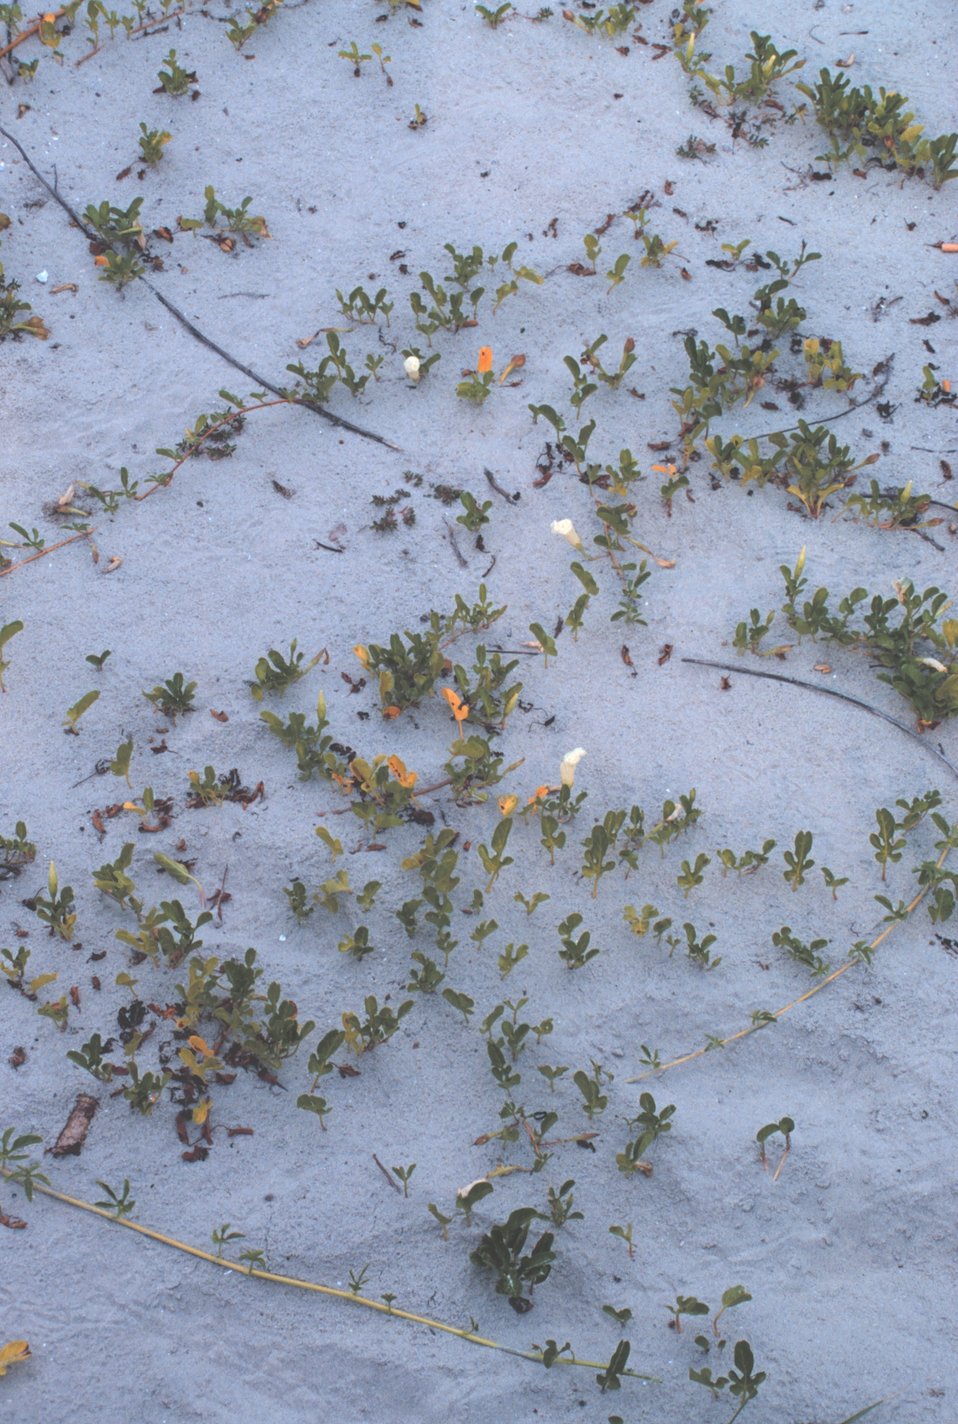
Colonizing plants help stabilize the dunes